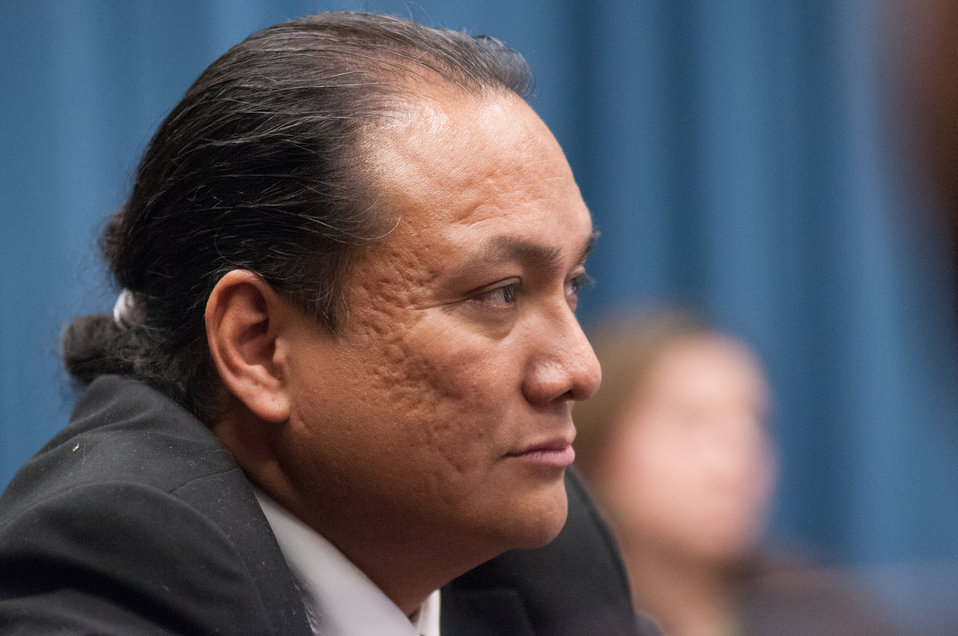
U.S. Department of Agriculture (USDA) 1994 Program Director Lawrence Shorty, during the USDA and American Indian Higher Education Consortium Leadership Group Winter Meeting , at the USDA Whitten Building Williamsburg Room, in Washington D.C., on Friday, Feb. 8, 2013.